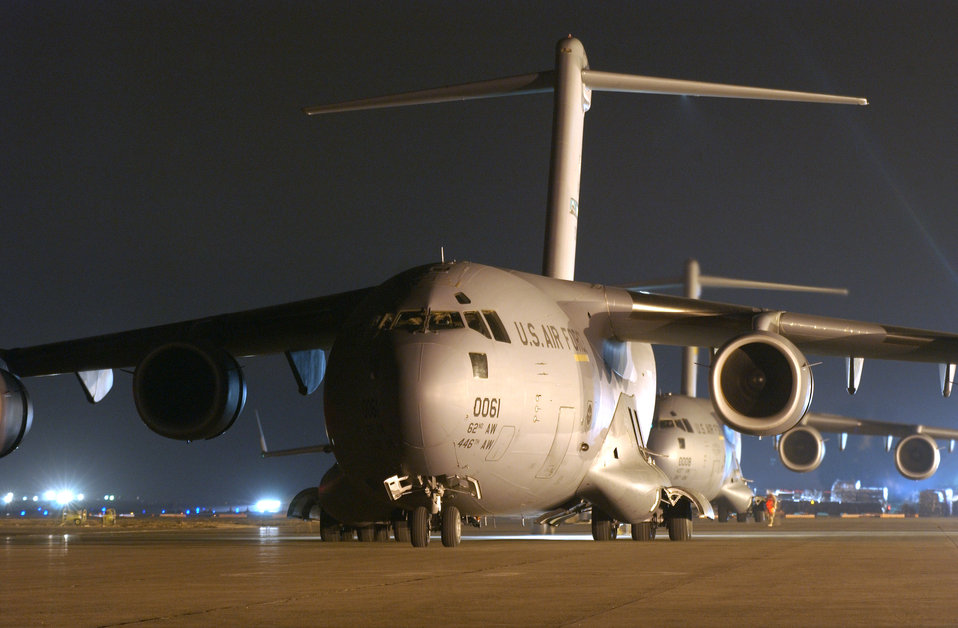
Twilight turnaround

BALAD AIR BASE, Iraq -- Two C-17 Globemaster III aircraft prepare to depart after their cargo was unloaded here Nov. 30. Airmen of the 332nd Expeditionary Logistics Readiness Squadron's aerial port flight are responsible for handling all strategic airlift cargo flown into Balad.